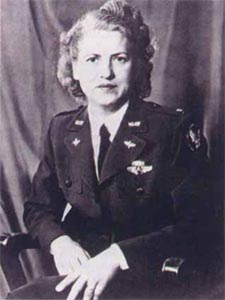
Jacqueline